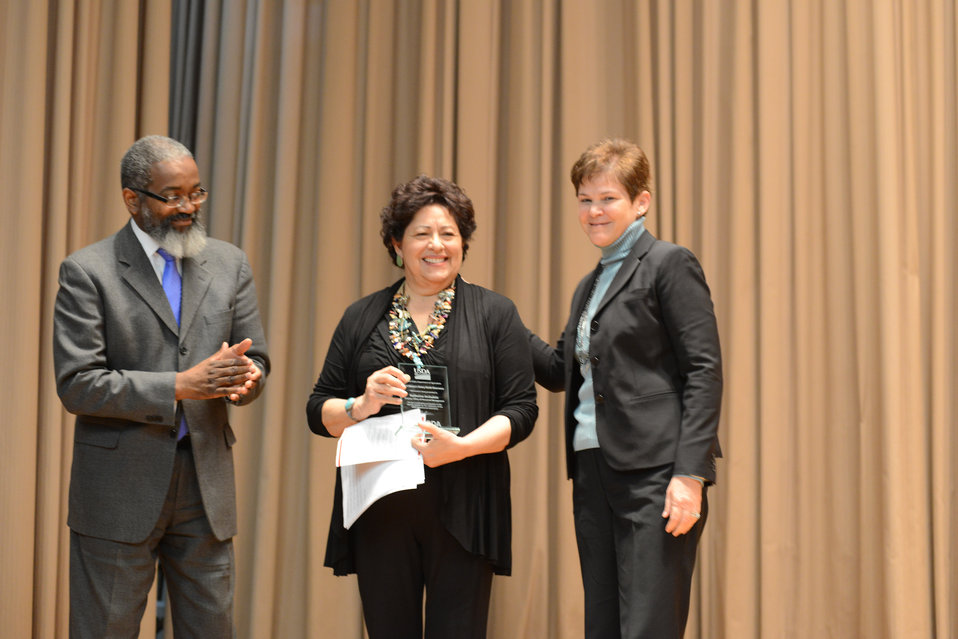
(L to R) U.S. Department of Agriuclture (USDA) Departmental Management (DM) Director Dr. Gregory Parham, U.S. Office of Personnel (OPM) Director Katherine Archuleta, and Agriculture Deputy Secretary Krysta Harden stand together on stage in the Jefferson Auditorium at USDA on Thursday, Mar. 13, 2014. USDA presented OPM Director Katherine Archuleta with a plaque thanking Archuleta for her participation in USDA's Women's History Month Oberservance.